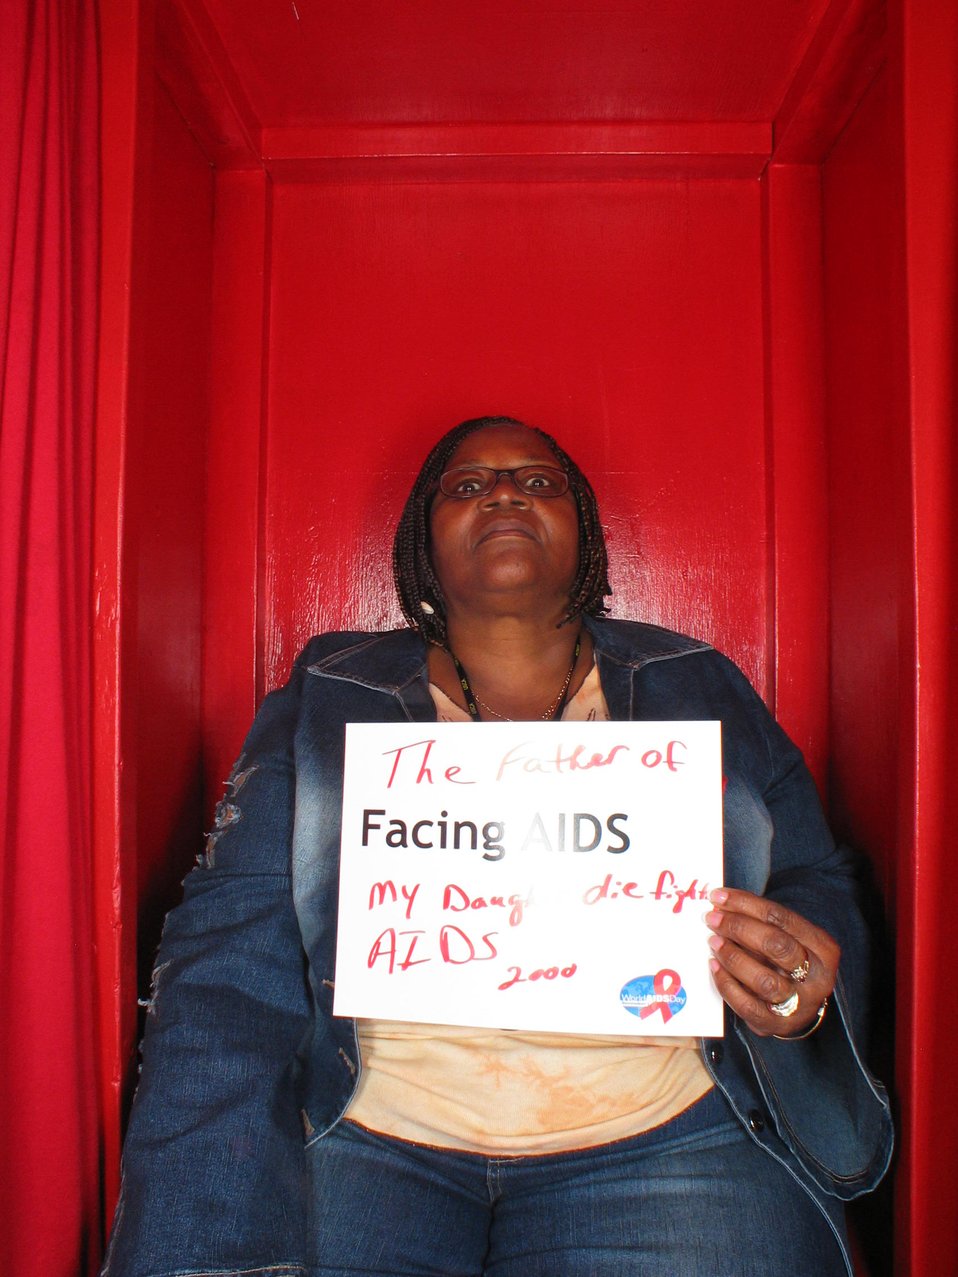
Facing AIDS The father of my daughter died fighting AIDS 2000